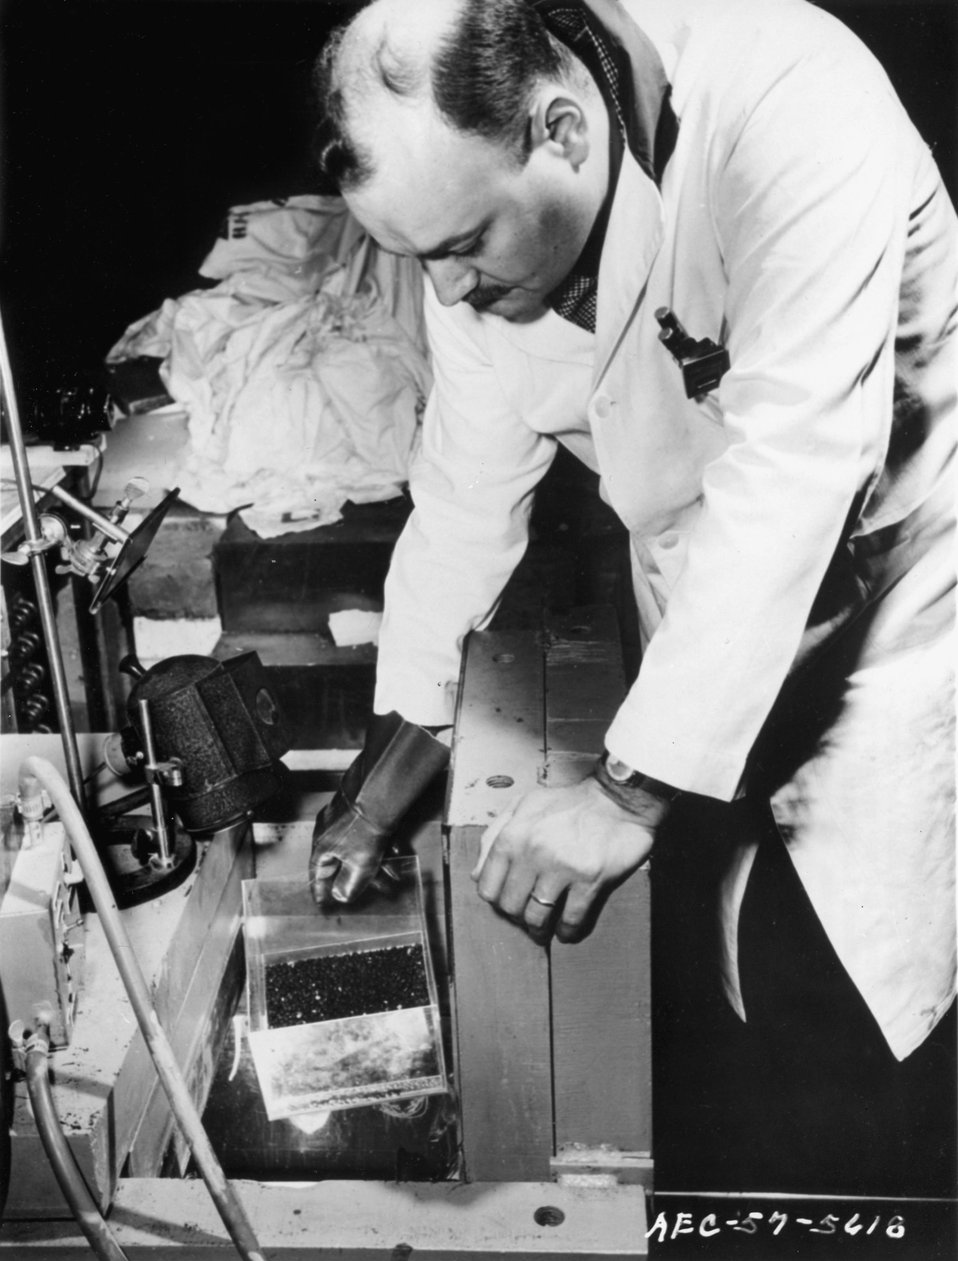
Soy beans mailed in by several middle western agriculture experiment stations being lowered into the nuclear reactor at Brookhaven National Laboratory. c. 1957